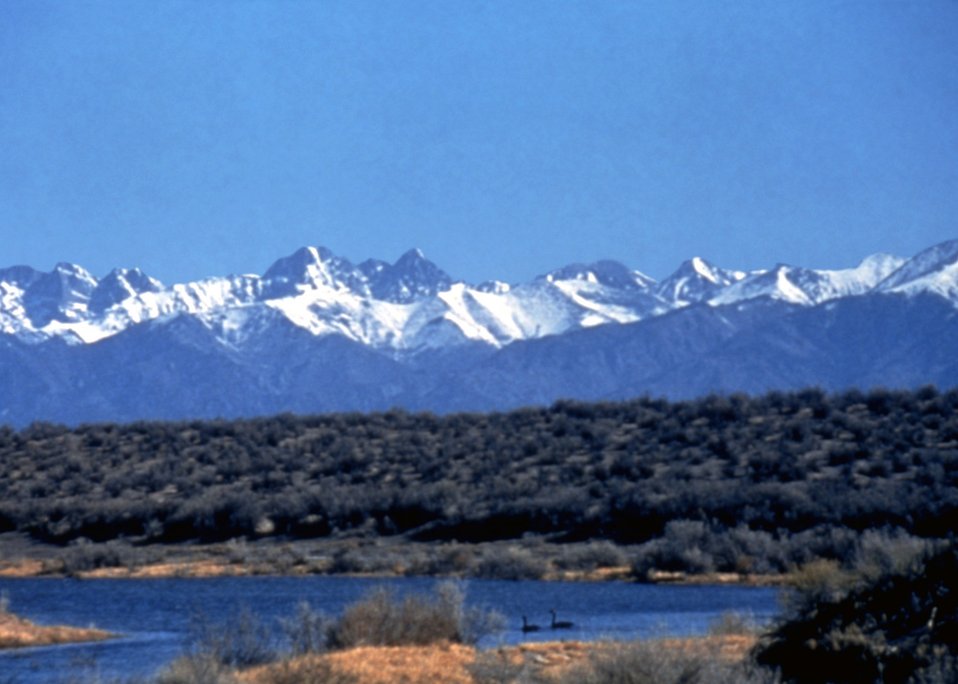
Blancco Wet Lands